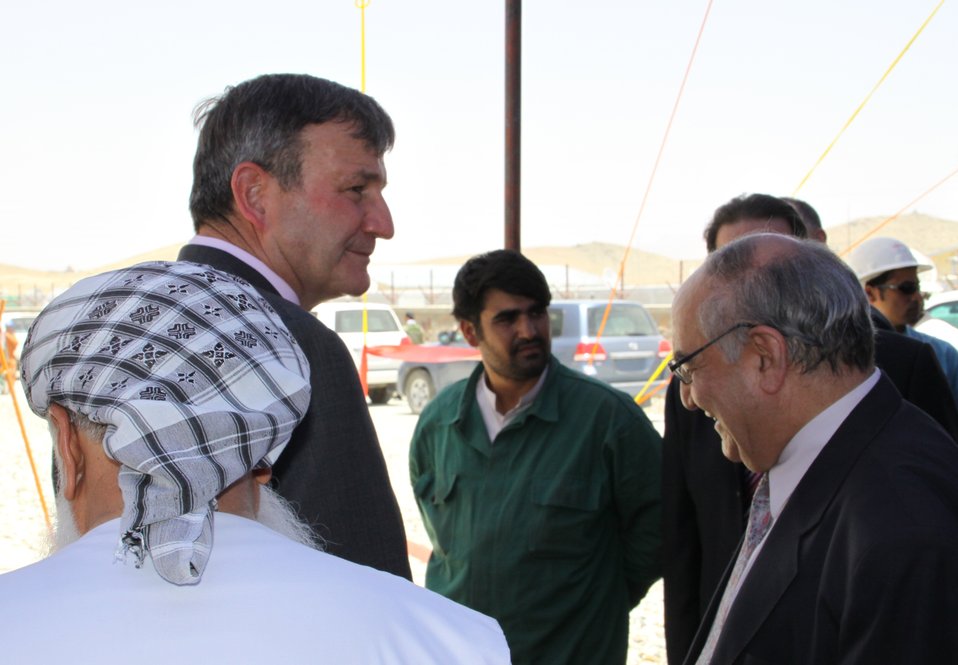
105 MW Tarakhil Power Plant Handover